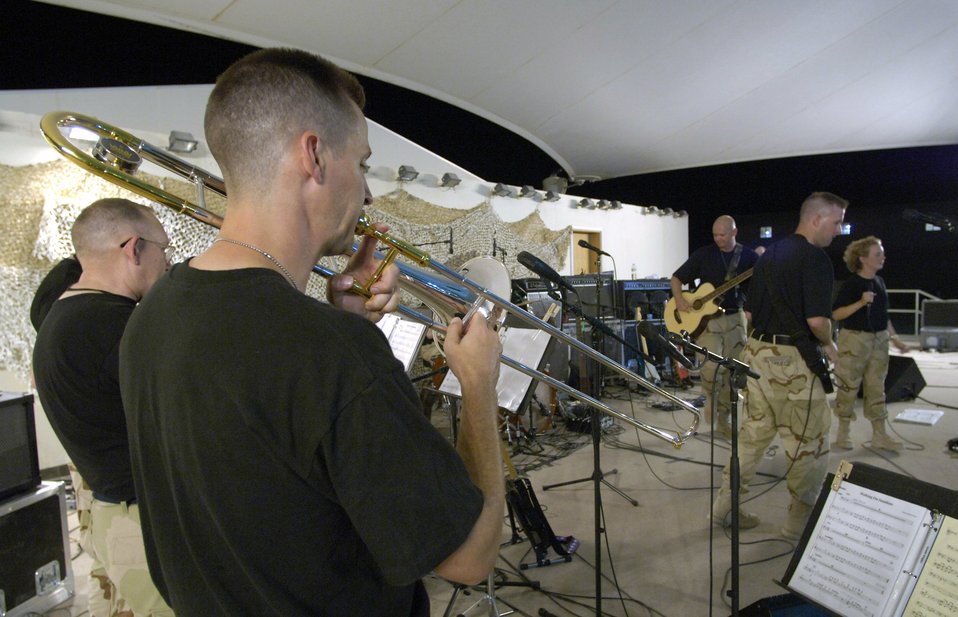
Expeditionary band performs for troops in Southwest Asia

Two U.S. Central Air Forces expeditionary bands that debuted under their new names